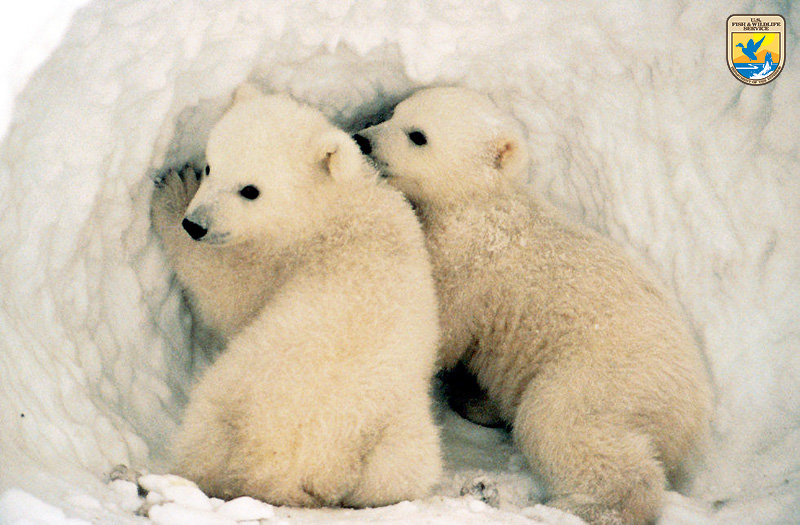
Polar Bear cubs, Alaska